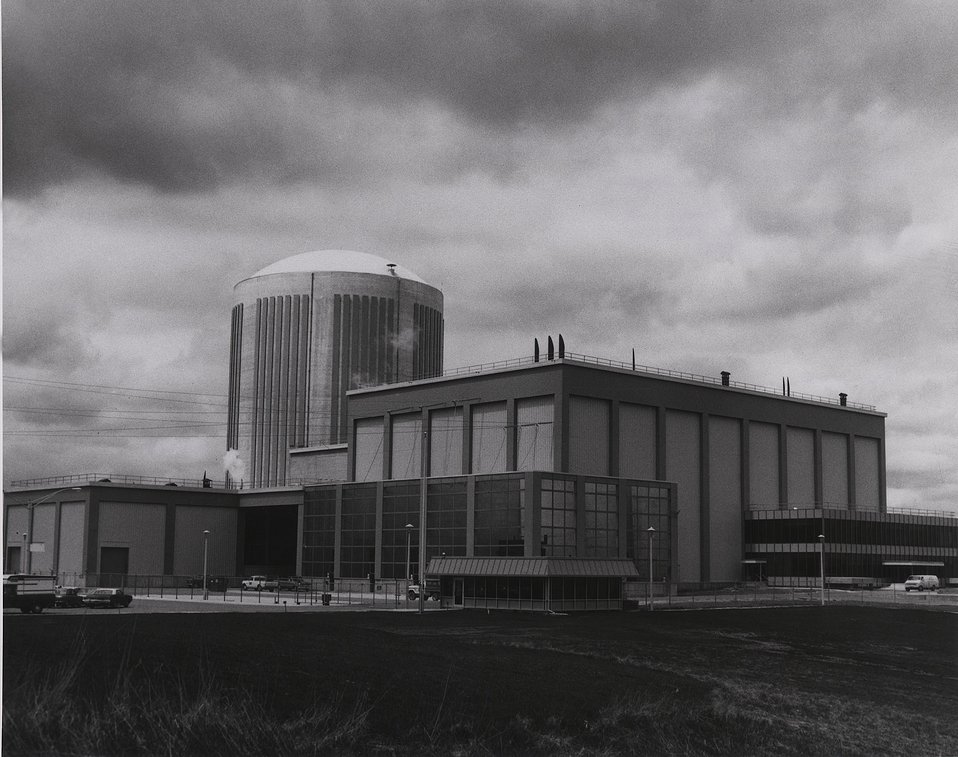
The Kewaunee Nuclear Power Plant at Carlton, Wisconsin.